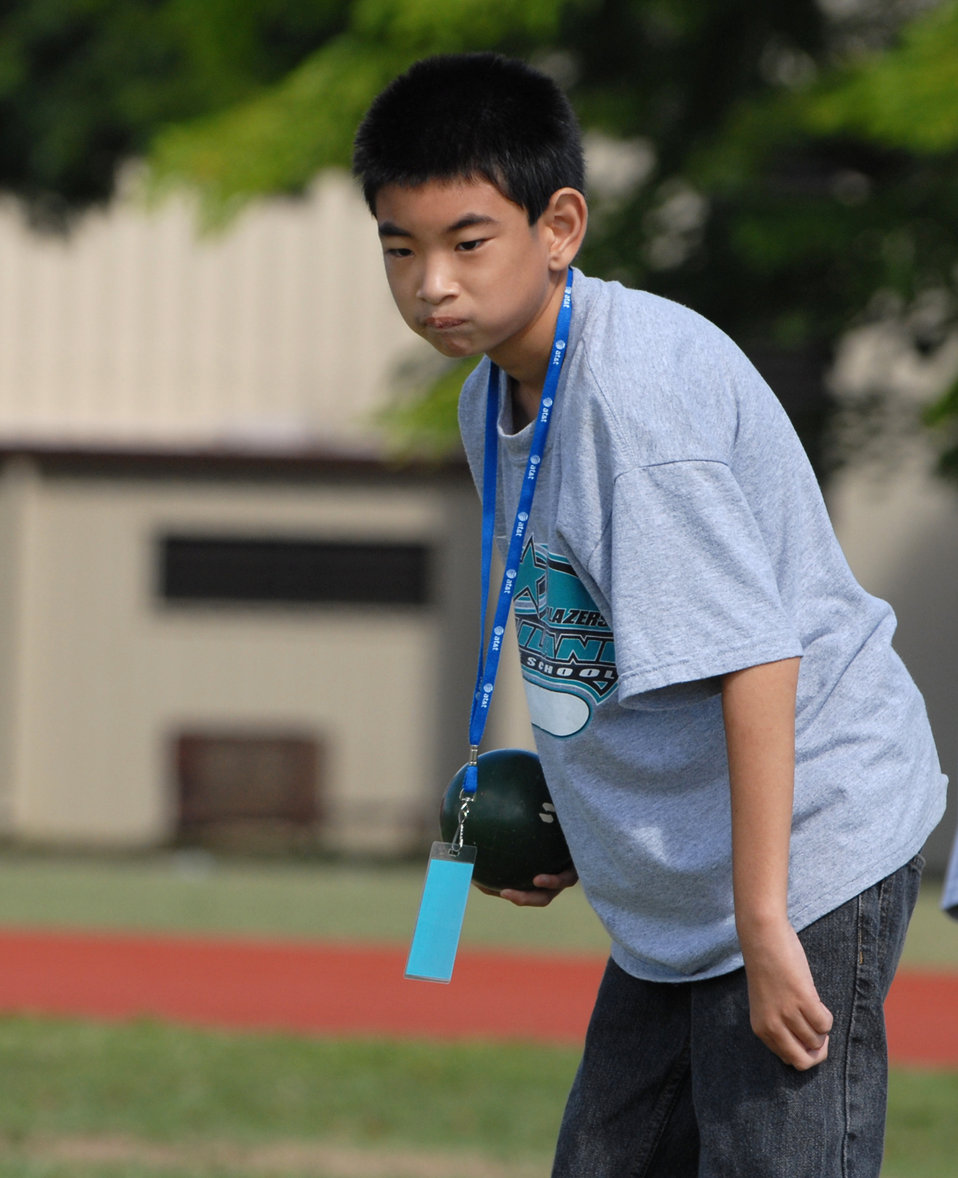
Special Olympics

Justin Ikehara, 12, plays bocce ball during Special Olympics Dec. 4, 2010, at Joint Base Pearl Harbor-Hickam, Hawaii.